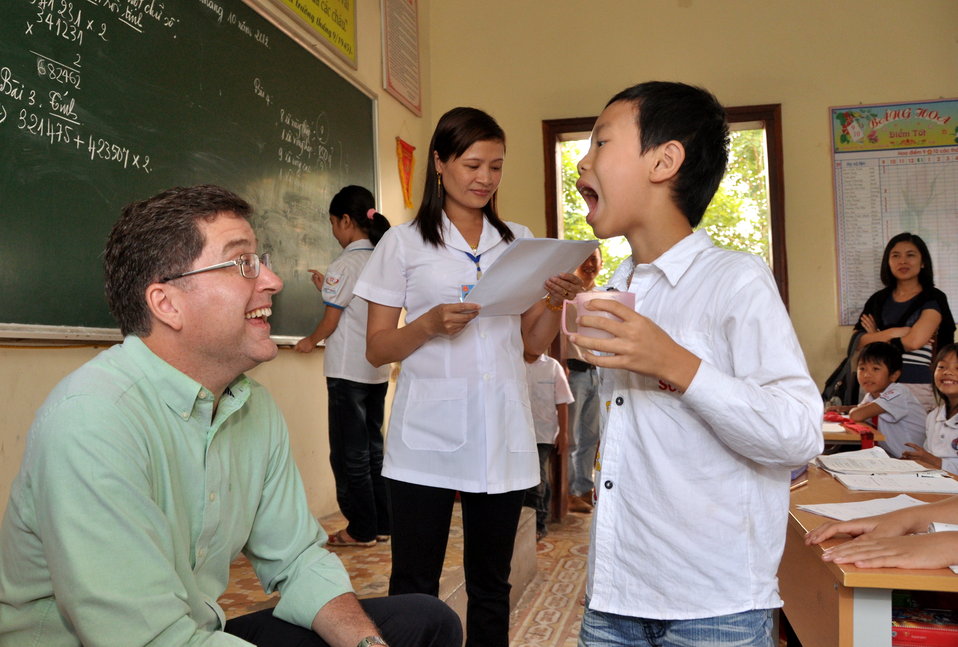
School children receive a dose of deworming medicine in Dien Bien